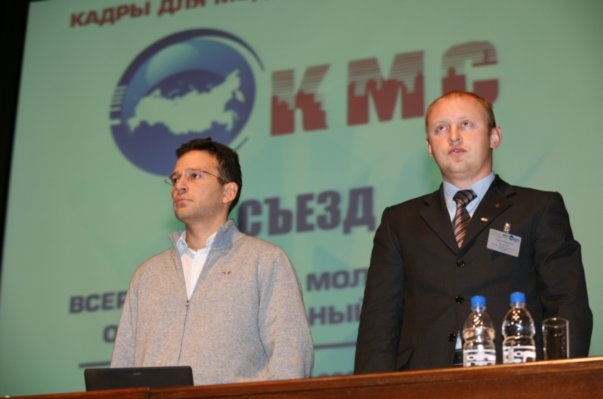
1 Congress Project personnel for the country's modernization, youth movement NASHI. The Members Of The Bureau Русский: Василий Якеменко и Сергей Белоконев в президиуме на 1 съезде проекта КМС - Кадры для молернизации страны, движения НАШИ.